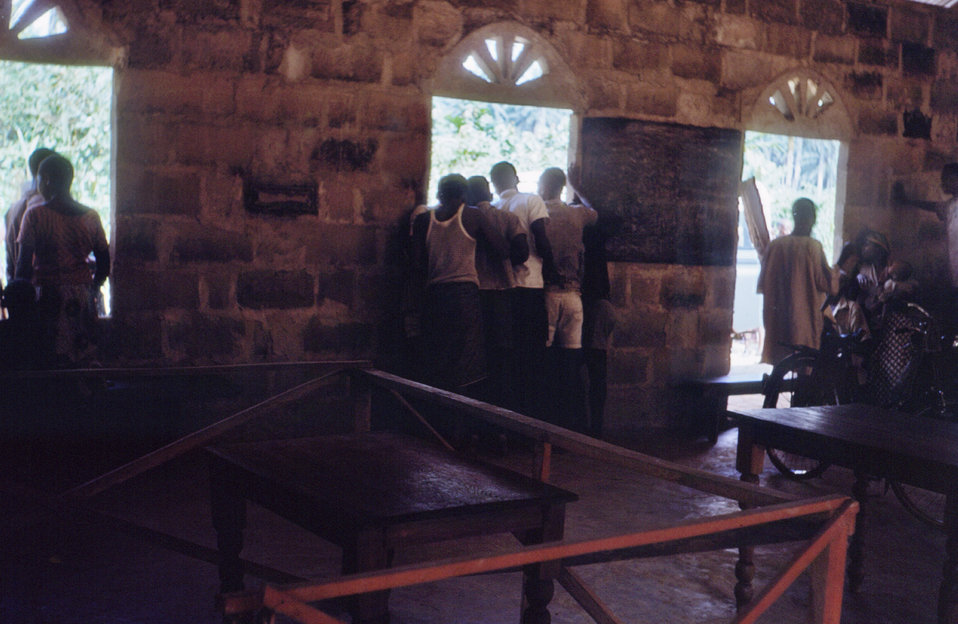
This 1968 photograph shows the inside of a Nigerian building that was used as a food distribution station for refugees during the Nigerian-Biafran civil war.